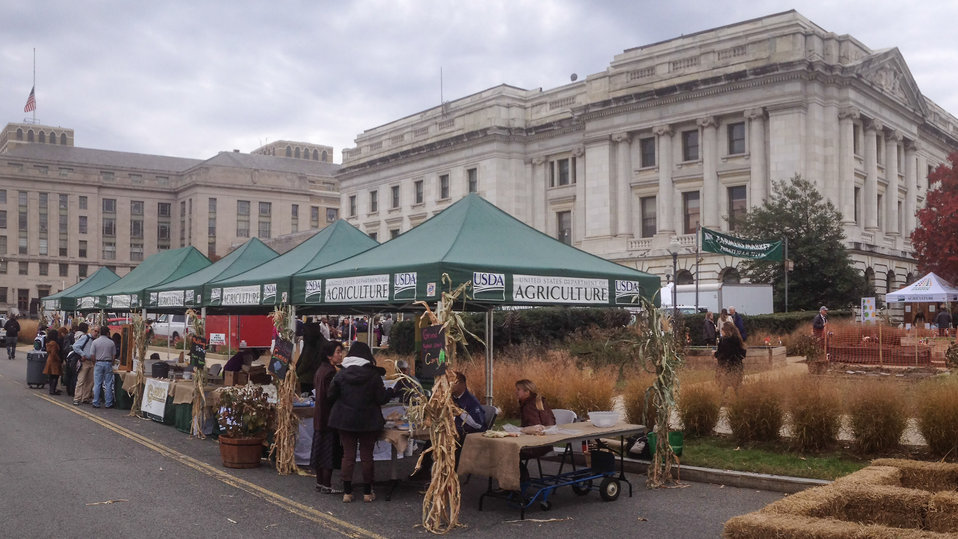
The U.S. Department of Agriculture (USDA) final outdoor market and Harvest Festival at the USDA Whitten Building east parking lot in Washington, D.C., on Friday, November 22, 2013.